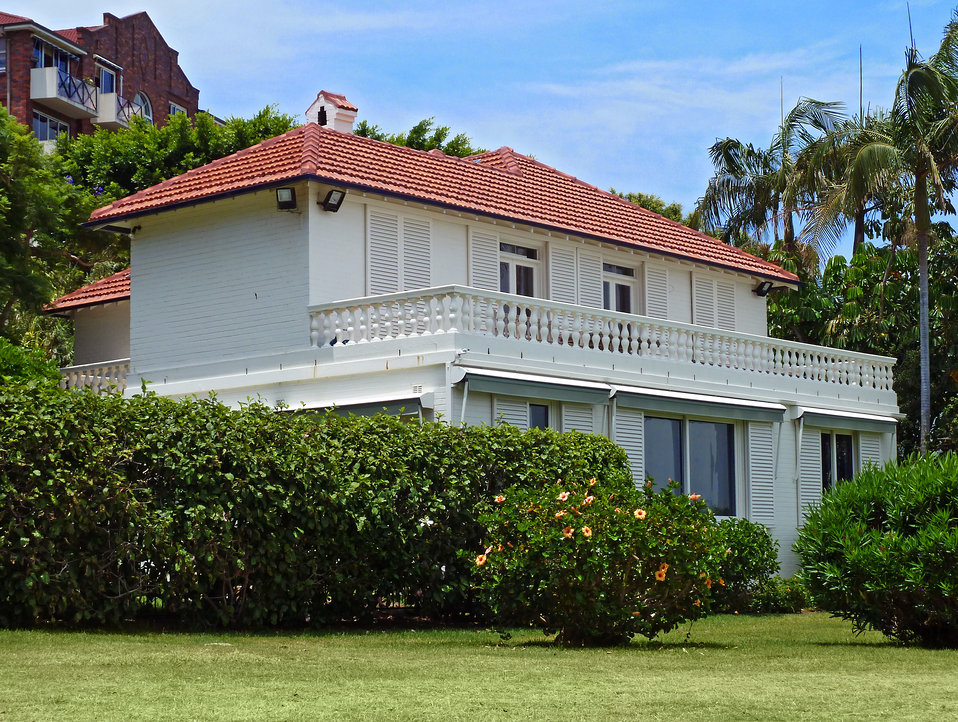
16 Dumaresq Road, Rose Bay, New South Wales, Australia.